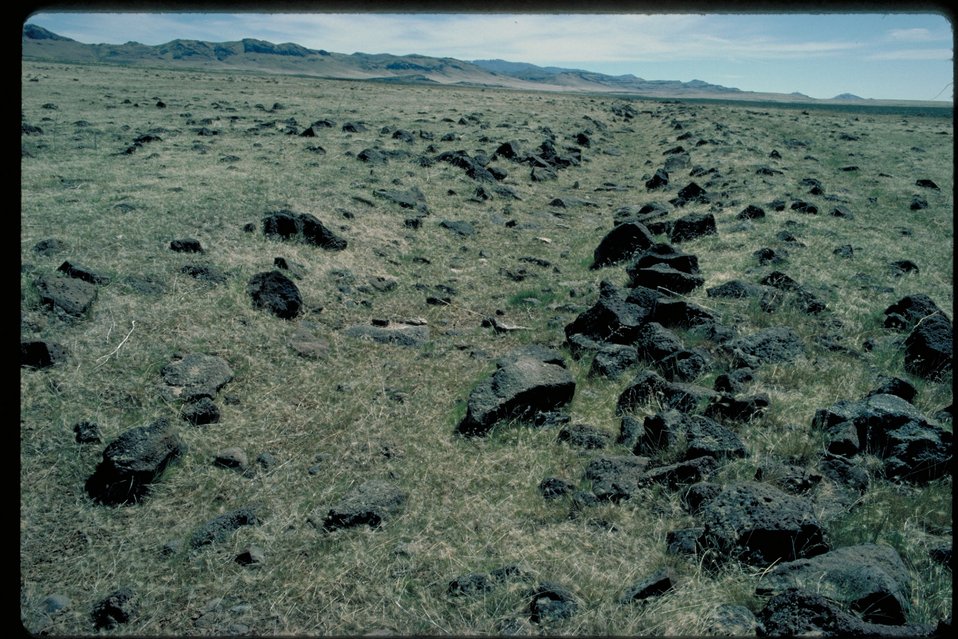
Oregon Trail West of Canyon Creek Lower Snake River District